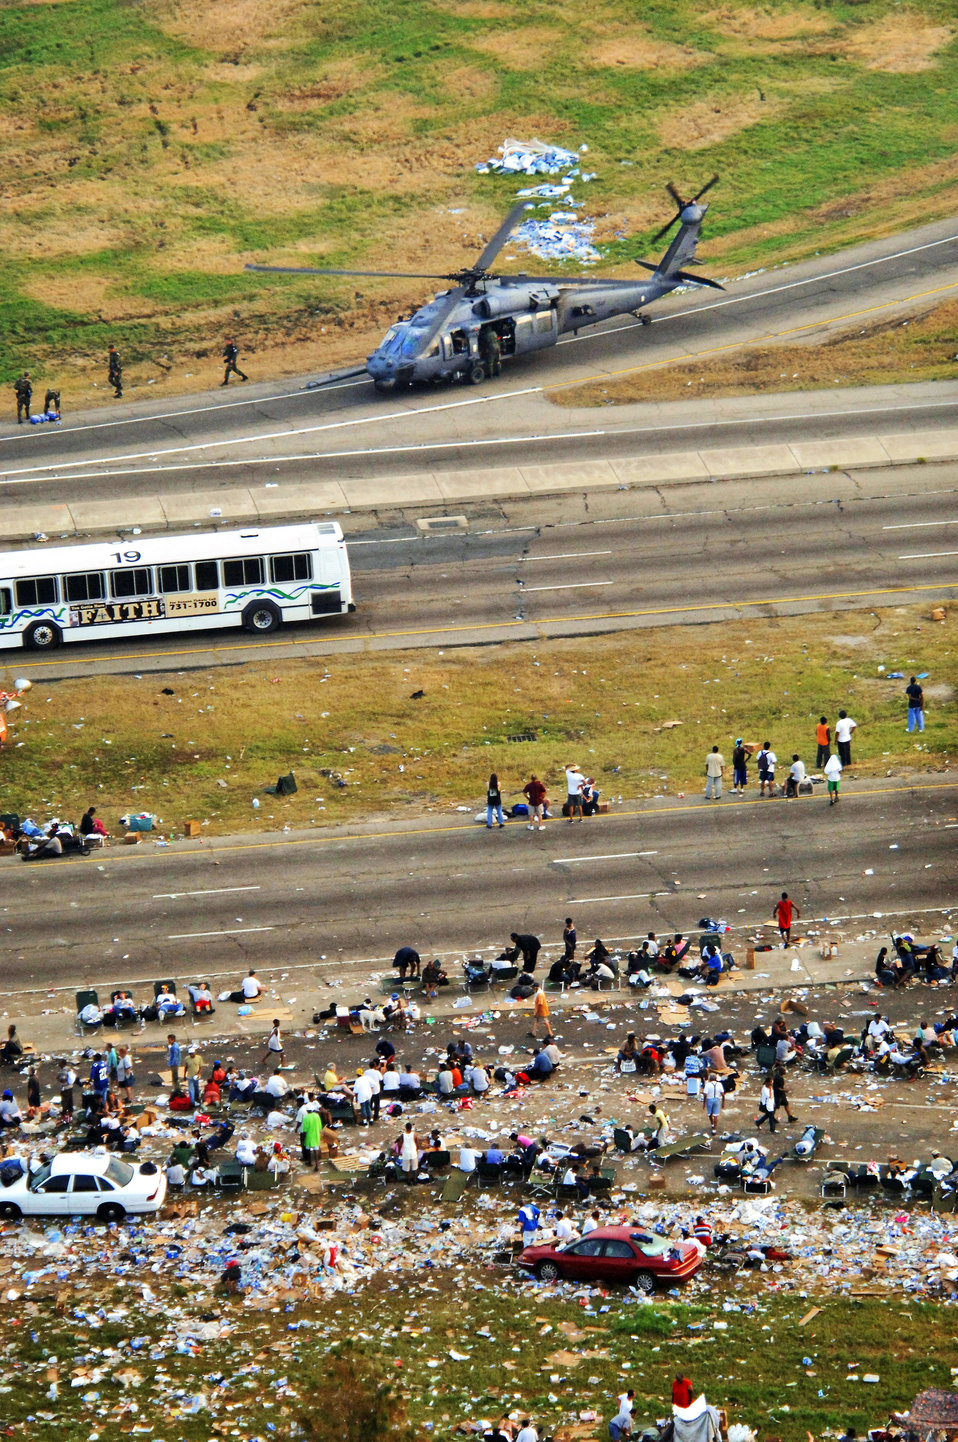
Operation Hurricane Katrina Relief

NEW ORLEANS -- Air National Guard members deliver water and food to stranded citizens here after the city was devastated by Hurricane Katrina. The National Guard has been mobilized to take part in Joint Task Force - Katrina, a humanitarian assistance operation.